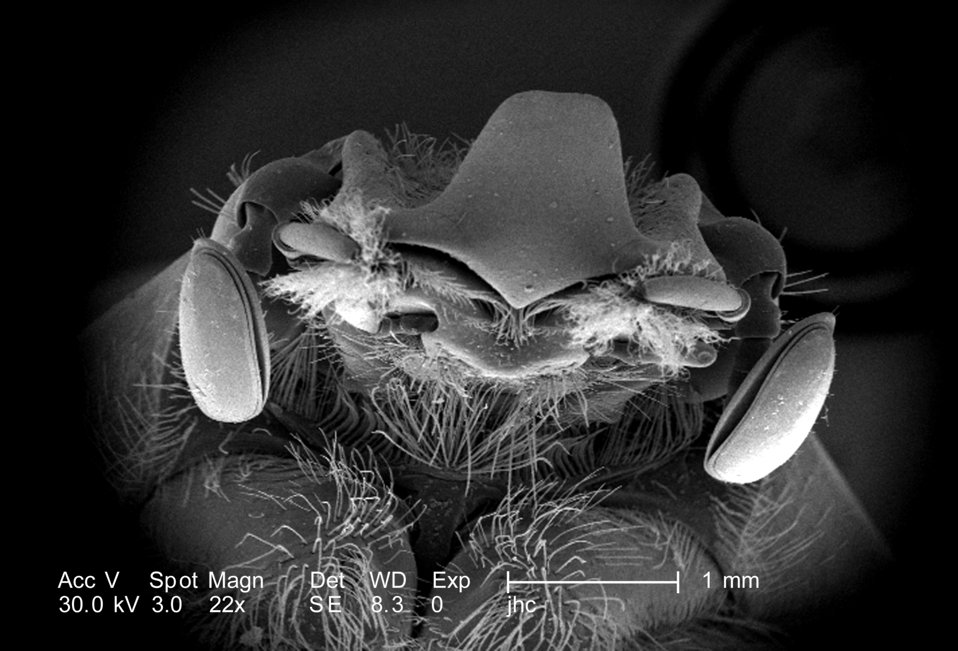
At a low magnification of only 22X, this scanning electron micrograph (SEM) depicted some of the morphologic exoskeletal features located on the head region of an adult 'figeater' beetle, Cotinis mutabilis. Sometimes referred to as a 'junebug, this insect is a member of the taxonomic family, Scarabaeidae, or dung beetles. Note the pair of lamellate, bilaterally-situated antennae, which are in a folded position.